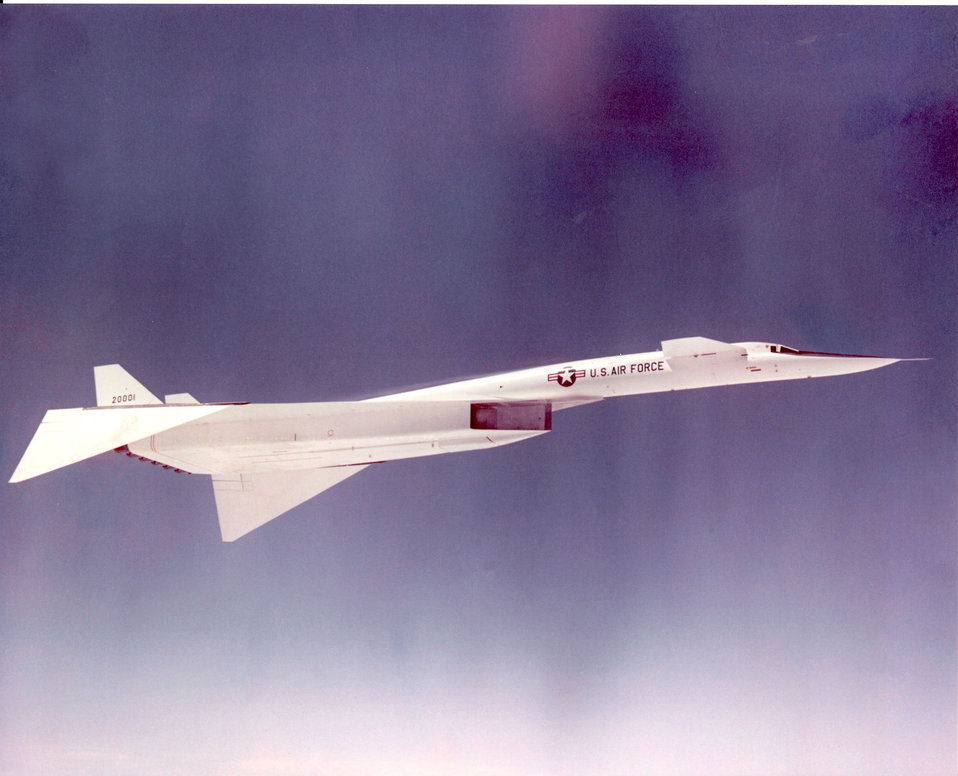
XB-70 Valkyrie accelerates to Mach 3.02

The mammoth XB-70 Valkyrie achieved its design speed Oct. 14, 1965 when it accelerated to Mach 3.02, or 2,000 mph at 70,000 feet altitude over Edwards Air Force Base, Calif. The aircraft weighed 500,000 pounds.